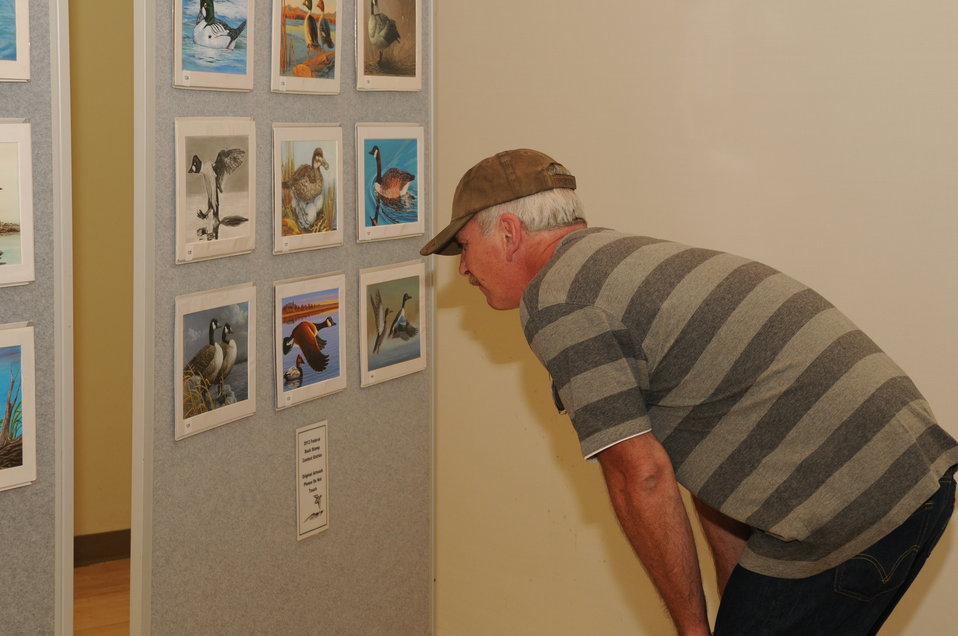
Artwork Viewing

The U.S. Fish & Wildlife Service sponsored the 2012 Federal Duck Stamp Art Contest September 28 and 29 in Ogden, Utah, at Weber State University. A panel of five judges was responsible for choosing the art work used to design the 2013-2014 Migratory Bird Hunting and Conservation Stamp.